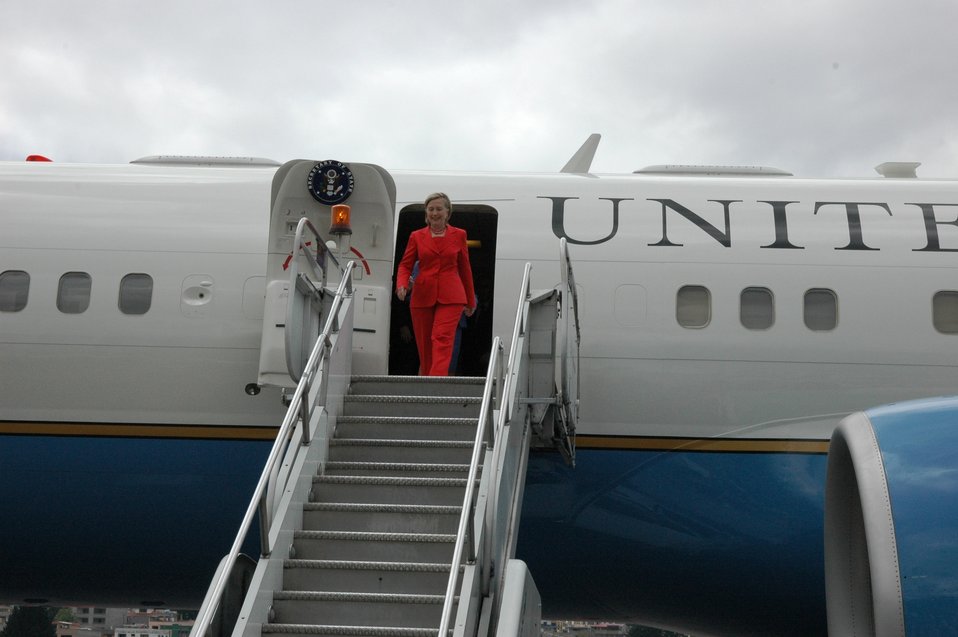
Secretary Clinton Arrives in Quito, Ecuador

U.S. Secretary of State Hillary Rodham Clinton arrives in Quito, Ecuador, on June 8, 2010.